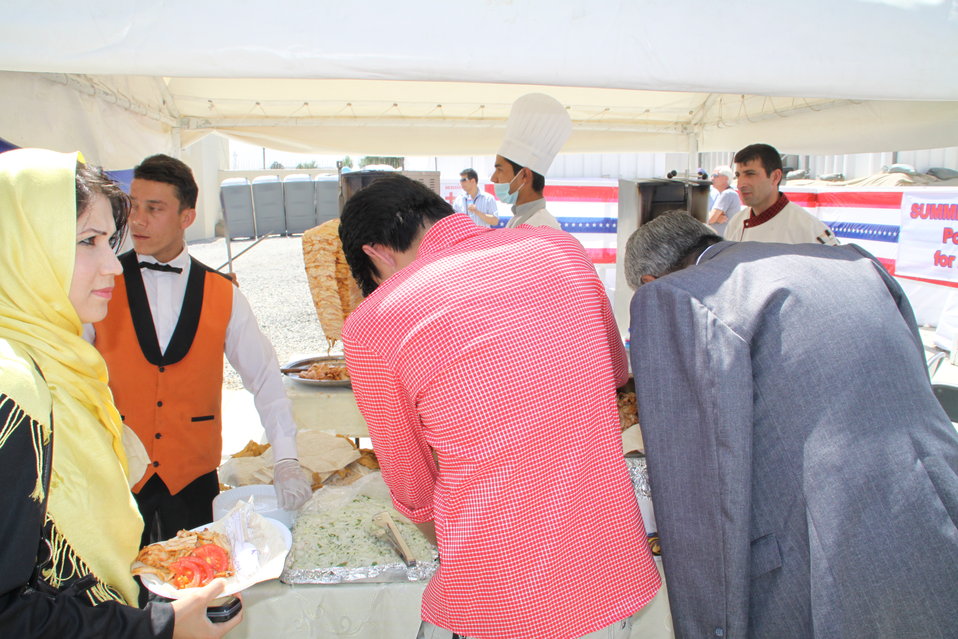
Kabul Official July 4th Celebration